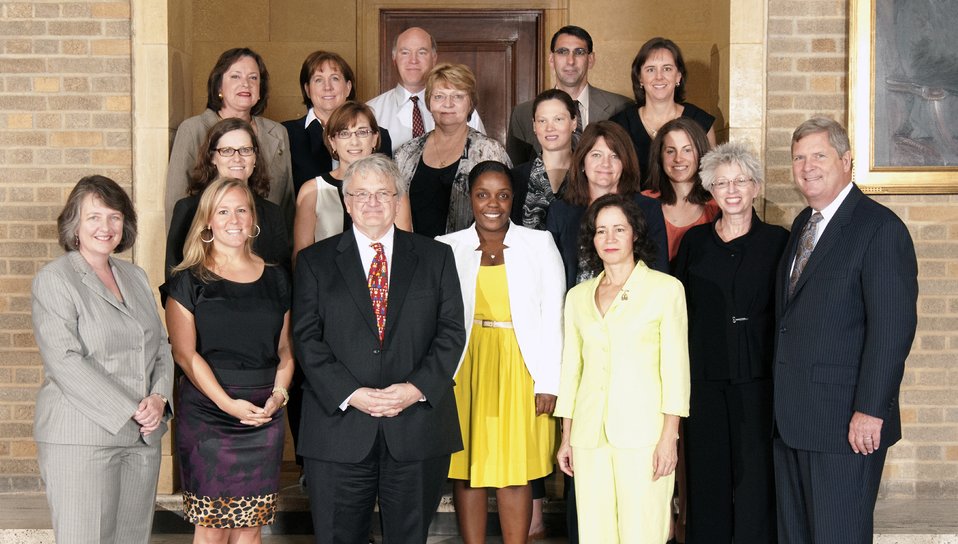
Agriculture Secretary Tom Vilsack and Deputy Agriculture Secretary Kathleen Merrigan with Honor Award Group Healthy, Hunger-Free Kids Act (HHFKA) Implementation Team on the patio of the U.S. Department of Agriculture in Washington, D.C. on Wednesday, Sept. 12, 2012. The HHFKA Implementation Team provided outstanding efforts supporting the implementation of the Healthy, Hunger-Free Kids Act of 2010.